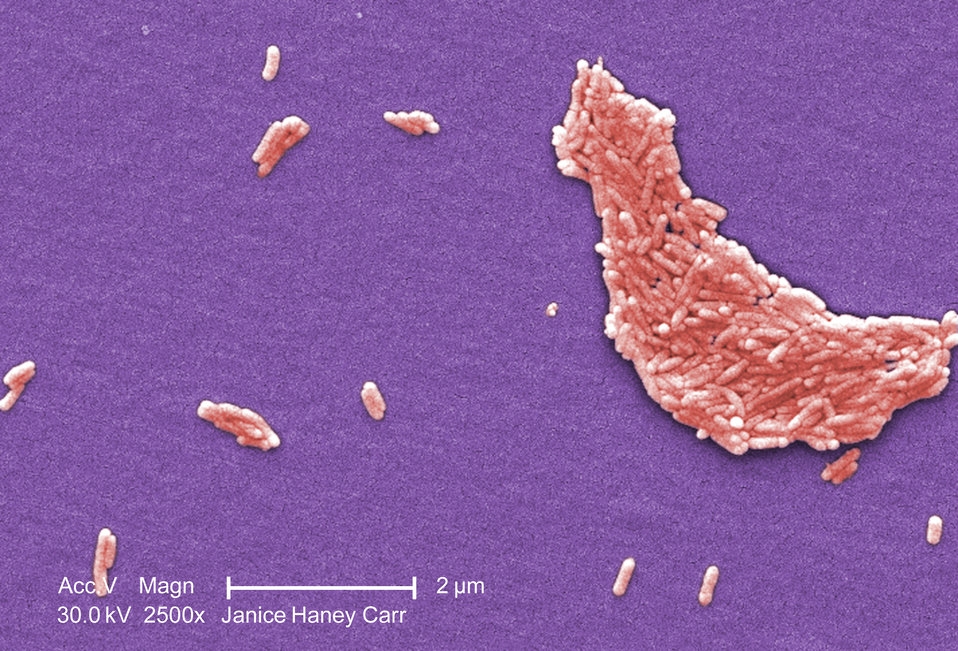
Under a magnification of 2500X, this colorized scanning electron micrograph (SEM) revealed the presence of a large number of Gram-negative Salmonella typhimurium bacteria that had been isolated from a pure culture.